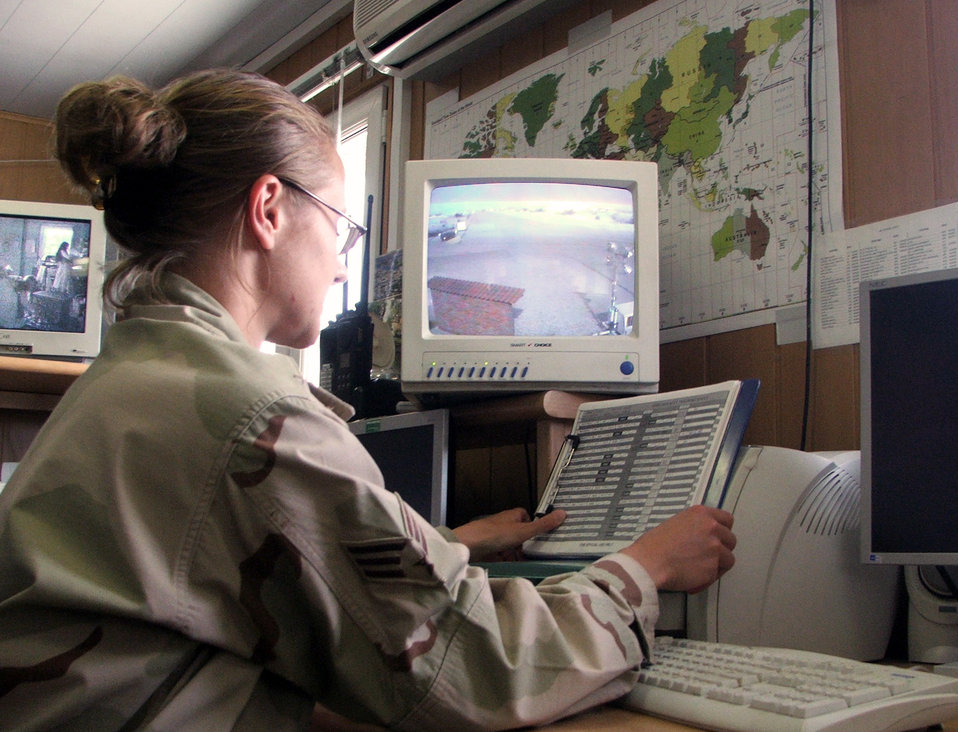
Expeditionary command post Airmen eyes, ears

KARSHI-KHANABAD AIR BASE, Uzbekistan -- Senior Airman MaRyha Self looks over a log sheet here May 4. She is a controller for the 416th Air Expeditionary Group's command post and is deployed from Barksdale Air Force Base, La.